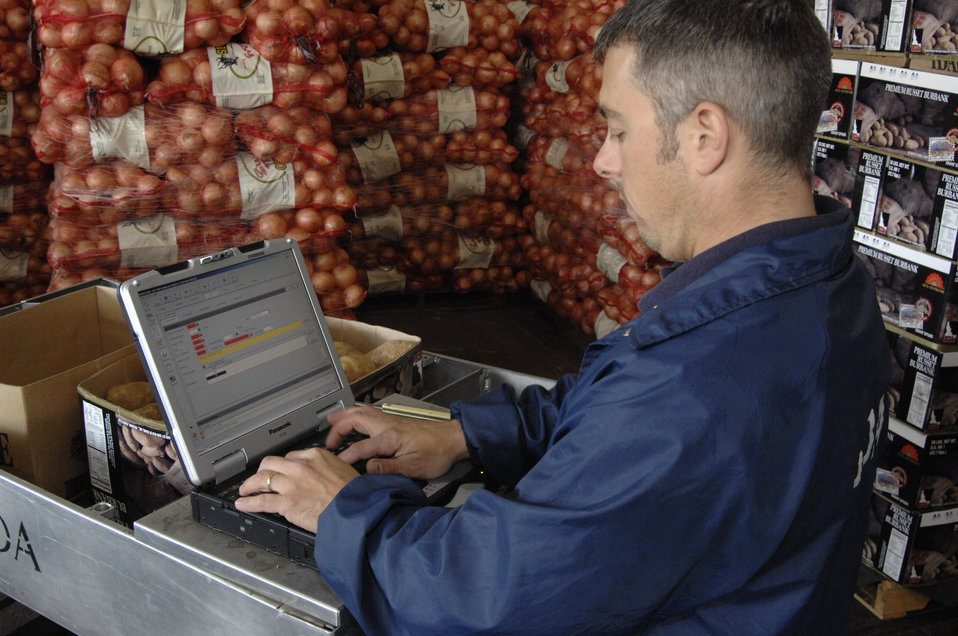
U. S. Department of Agriculture (USDA) Agricultural Marketing Service (AMS) inspector Geno DeSanto enters his grading results of fresh produce at the Philadelphia Food Distribution Center in Philadelphia, Pennsylvania on May 21, 2008.